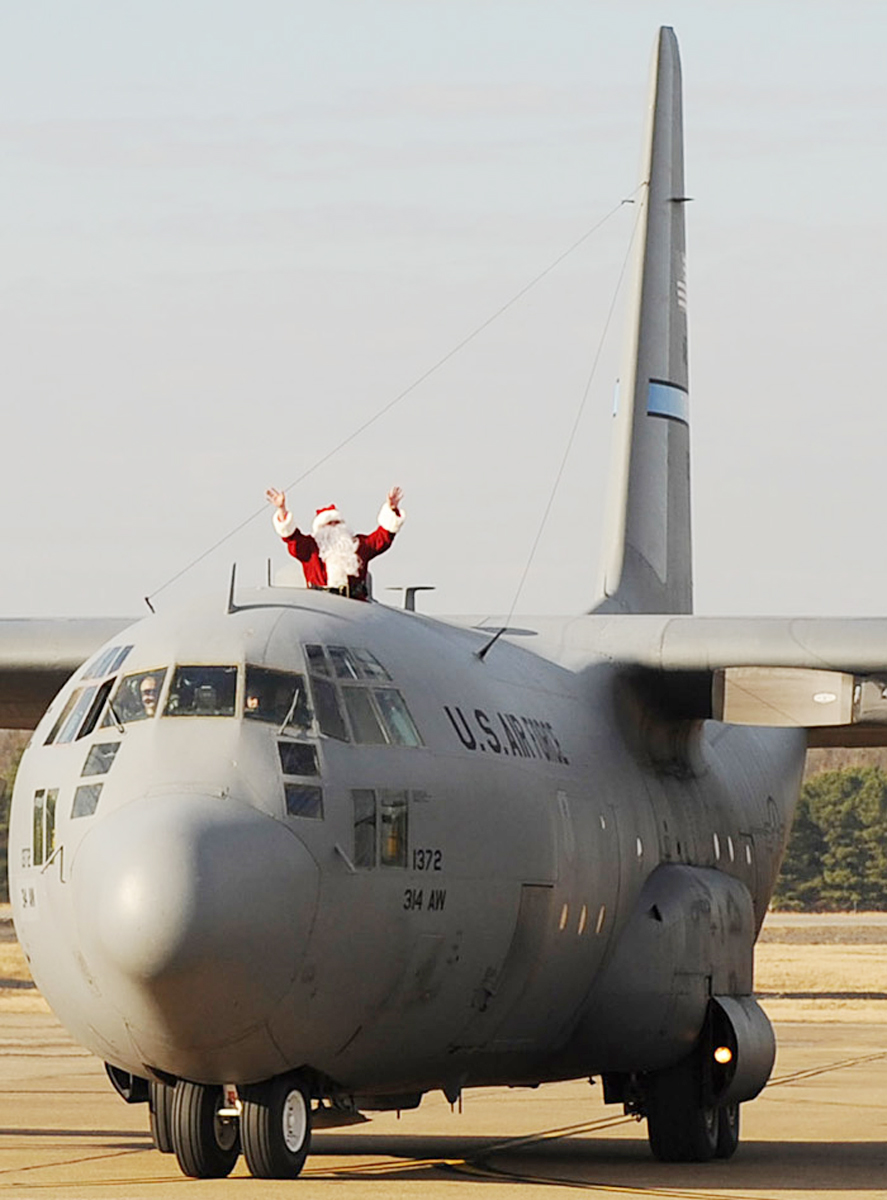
Ho, ho, ho!!

Santa Claus waves from a C-130 Hercules as it taxis along the flightline at Little Rock Air Force Base, Ark., Dec. 18, 2009. Santa, aka Lt. Col. Lance Avery, made the early visit to the base for the 62nd Airlift Squadron children's holiday party. Colonel Avery is the assistant director of operations for the 62nd AS.